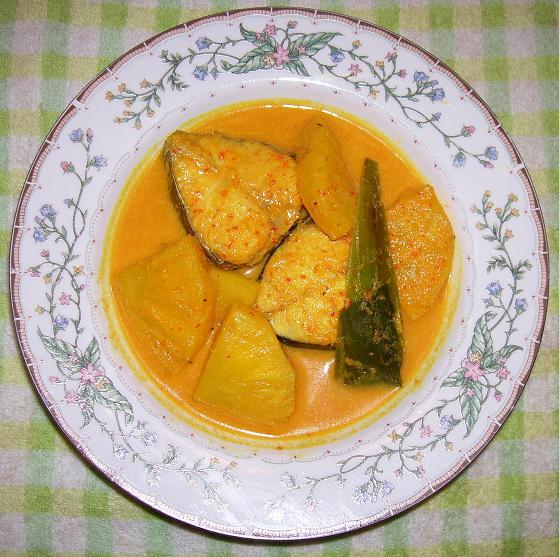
Gulai lemak cili padi